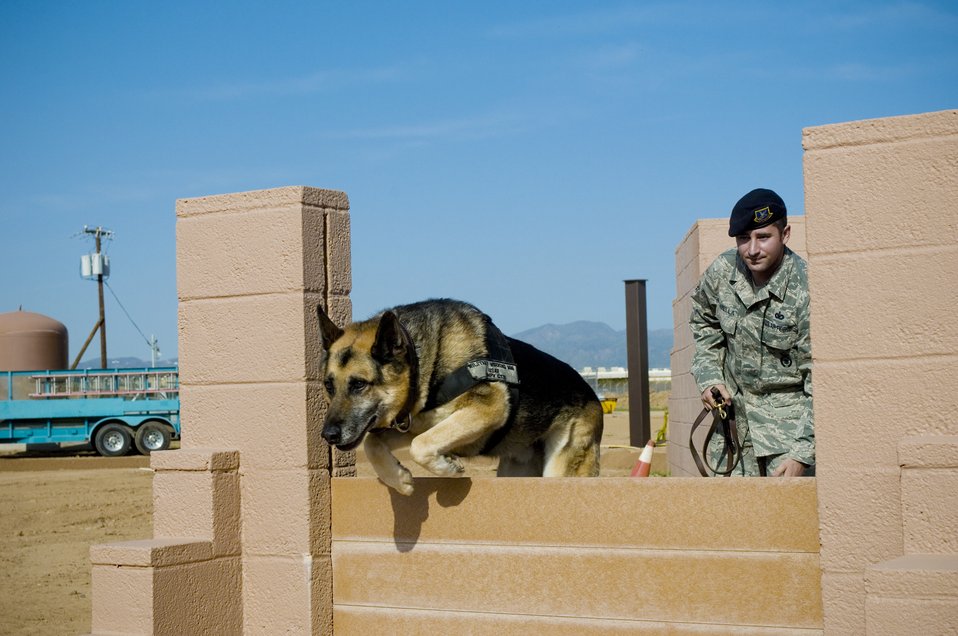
Working dogs take final run

Staff Sgt. John Pillarella commands Jampy to leap over a barrier during his final run of the obstacle course at the Military Working Dog kennels at Luke Air Force Base, Ariz., March 25, 2010. Jampy is one of three dogs due to be medically retired April 6, due to osteoarthritis, or bone loss in the joints. Sergeant Pillarella is the kennel master for the 56th Security Forces.